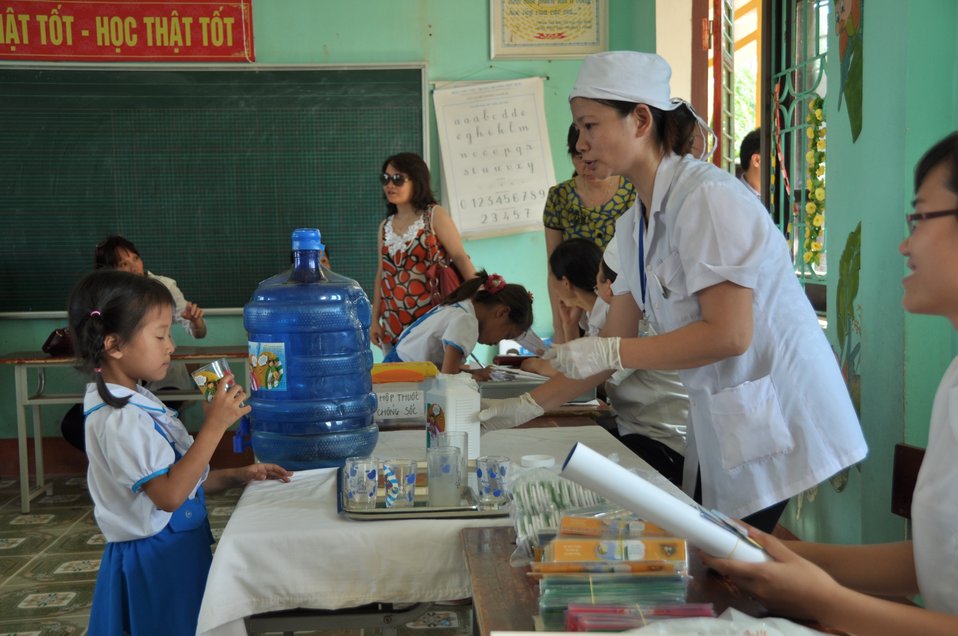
USAID supports deworming education and medication distribution in Bac Giang Province

May 20, 2013